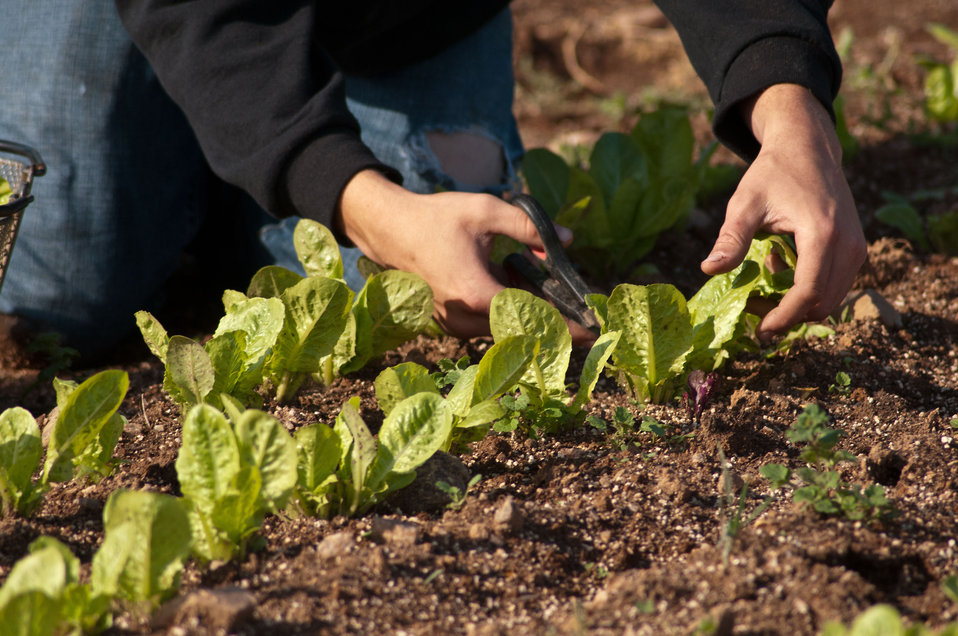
Andrew Myers gently harvest baby-lettuce leaves forManakintowne Specialty Growers, a 21-acre farm in Powhatan County, Virginia, on Friday, May 6, 2011. The farm where Jo Pendergraph, her family and team raise specialty produce for chefs and markets of Richmond, Charlottesville and Williamsburg, VA area. This includes the online food hub of Lulus Local Food served by the Fall Line Farms cooperative. This is one of the farms that chefs get those seemingly unique greens such as French Sorrel, Pea Shoots, Frisee, Tat soi, Mizuna, Pink/green radish shoots, Sunflower shoots, Baby red mustard, Tuscan Kale, Beet greens. All harvested by hand and scissors. As well as micro greens such as Pak choi, Tat soi, Mizuna, Purple kohlrabi, Shungiku (edible chrysanthemum), Ruby chard, Purple/Daikon/Triton radish, Red amaranth and Bull's Blood Beet. Edible flowers such as African Blue Basil, Nasturtiums, Johnny Jump Ups, and Chive blossoms Dianthus (pinks) are grown here. The seasonal choices are listed by suppliers and ordered by members on Lulus Local Food website, the food is distributed to pick-up points in the Richmond, VA area. They also offer a wide variety of household food staples and specialty fruits, vegetables, meats, soaps, eggs, cheeses, flowers, honey, pastas, sauces, syrups, baked goods, mushrooms, flour and grains from and for the Richmond. VA area.